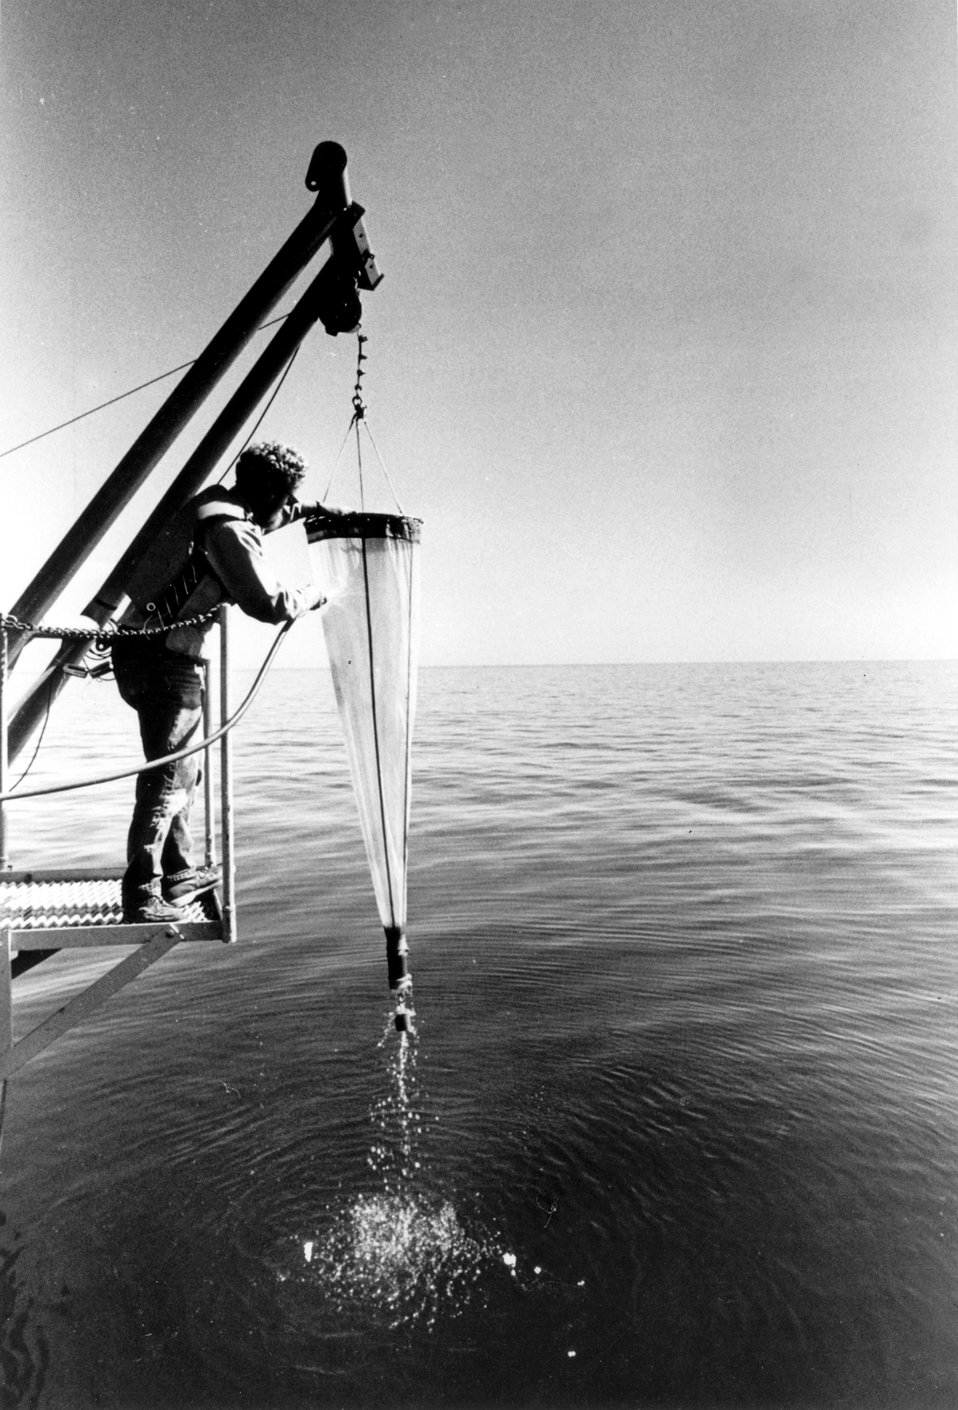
A research technician washes down a plankton net which is bringing up samples of minute plant and animal life from Lake Michigan in the vicinity of a steam electric generating station.
c.1972